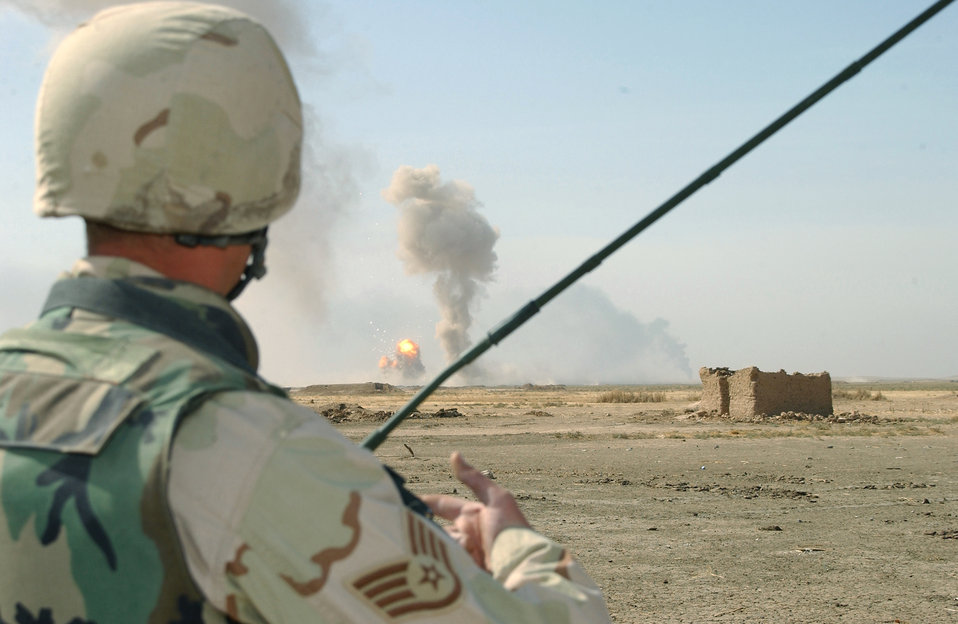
Operation Iraqi Freedom

KIRKUK AIR BASE, Iraq -- Staff Sgt. James Jay Cook III uses the remote control detonator to set off the explosives Oct. 25. Cook and other 506th Expeditionary Civil Engineering Squadron explosive ordinance disposal airmen have disposed of more than 1 million pounds of captured emeny munitions here.